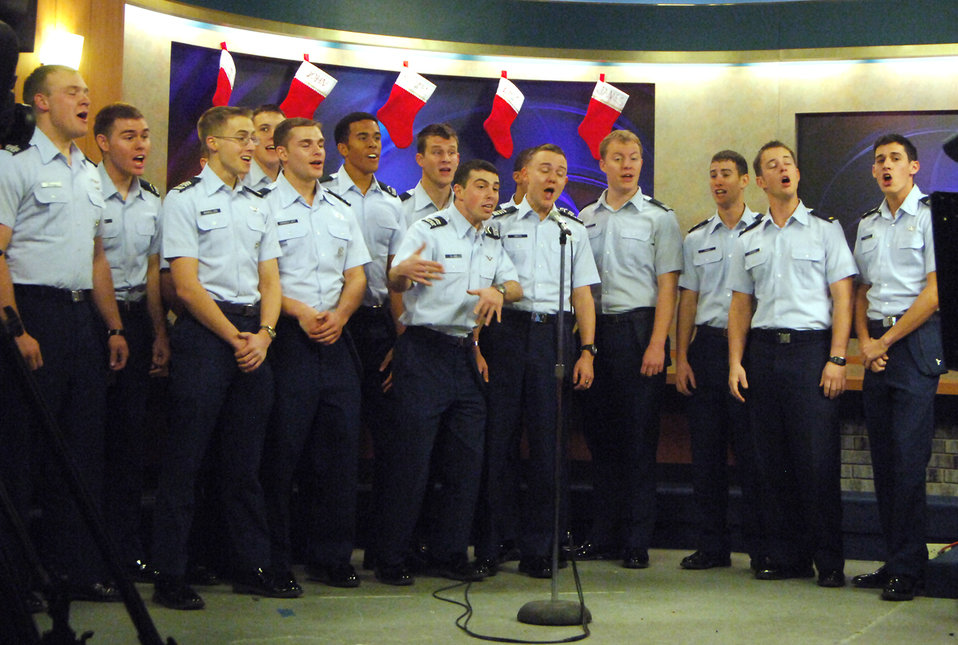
Air Force Academy cadets with the a cappella group